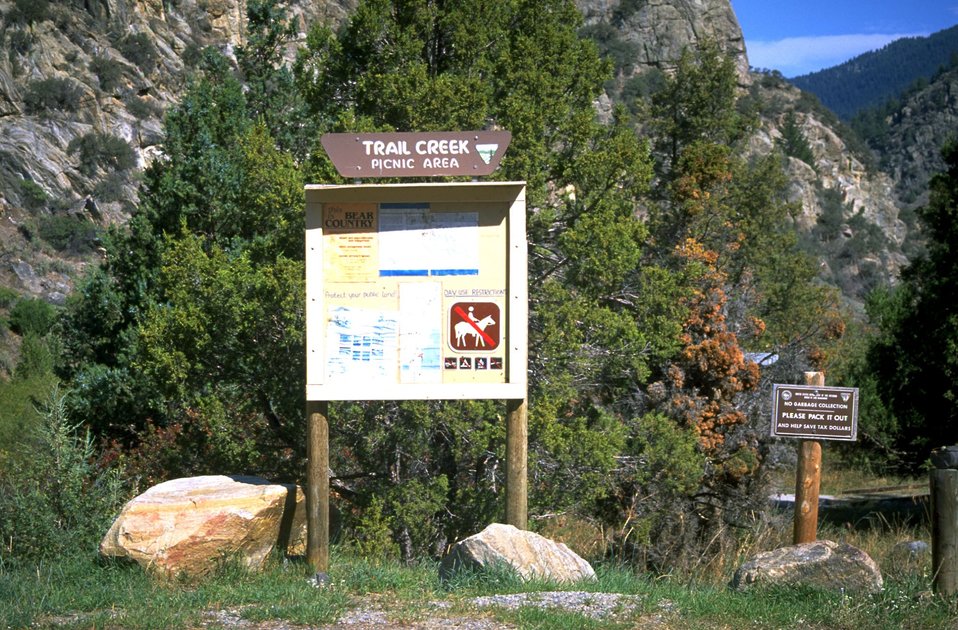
Kiosk at the Trail Creek Picnic Area